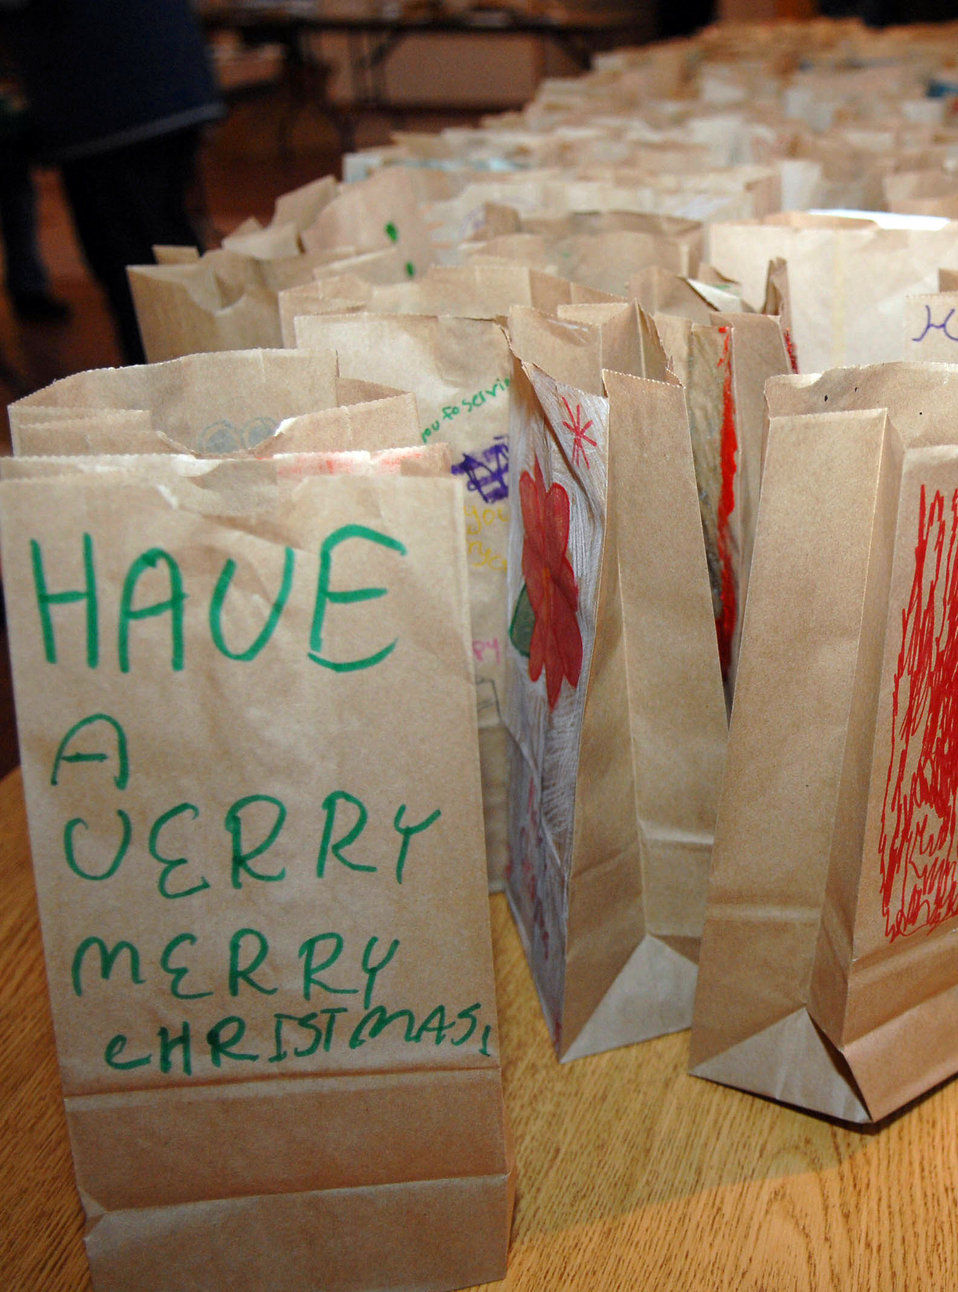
ROSC Cookie Drive

Bags with cookies sit atop a table in the North Side Chapel, Ramstien Air Base, Germany. The bags are destined for single servicemembers living in the dormitories on Vogelweh Military Complex and Ramstein Air Base, Dec. 10, 2009. The Ramstein Officer Spouses Club together with the Kaiserslautern Spouses Association and the Ramstein Enlisted Spouses Association collected more than 12,000 cookies to give to the more than 11,000 Airman who live in the dorms at the bases.